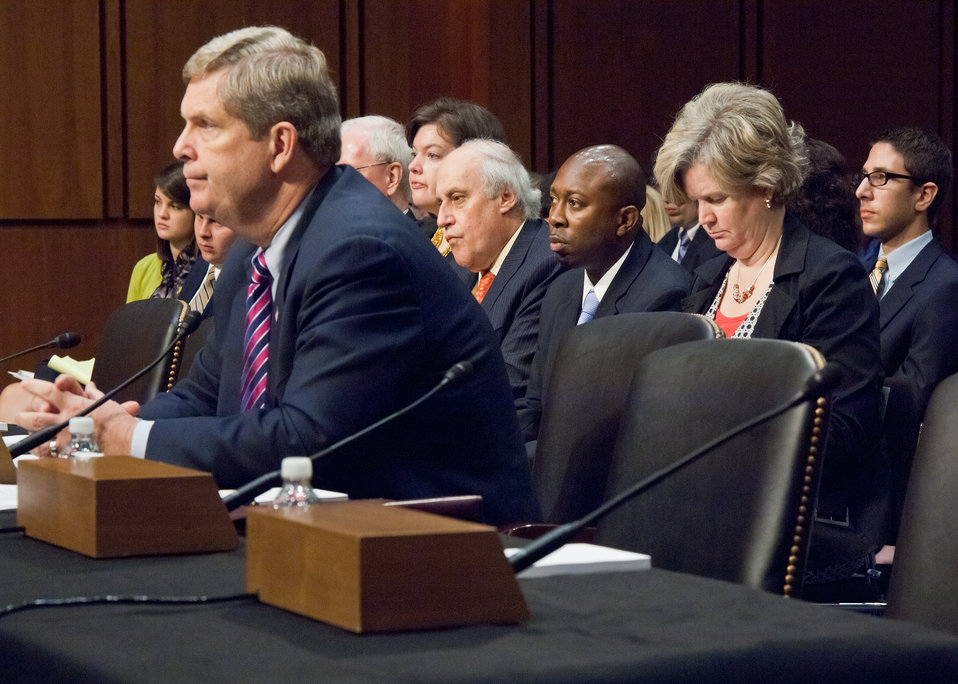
Agriculture Secretary Tom Vilsack was invited to speak to the U.S. Senate Committee on Agriculture, Nutrition and Forestry, in Washington, DC, Thur., May 26, 2011 to discuss the next Farm Bill. Directly behind Secretary Vilsack are from left: former Agriculture Secretary Dan Glickman, Co-Chair of the Chicago Council’s Global Agricultural Development Initiative and Senior Fellow, Bipartisan Policy Center, Washington, DC, Karis Gutter, Acting Deputy Undersecretary, Farm and Foreign Agricultural Service and Susan Palmeri, Acting Assistant Secretary, Congressional Relations. Secretary Glickman was a member of the witness panel to speak after Secretary Vilsack. The second panel included a farmer and members of marketing, research and academics who discussed the future of American agriculture.